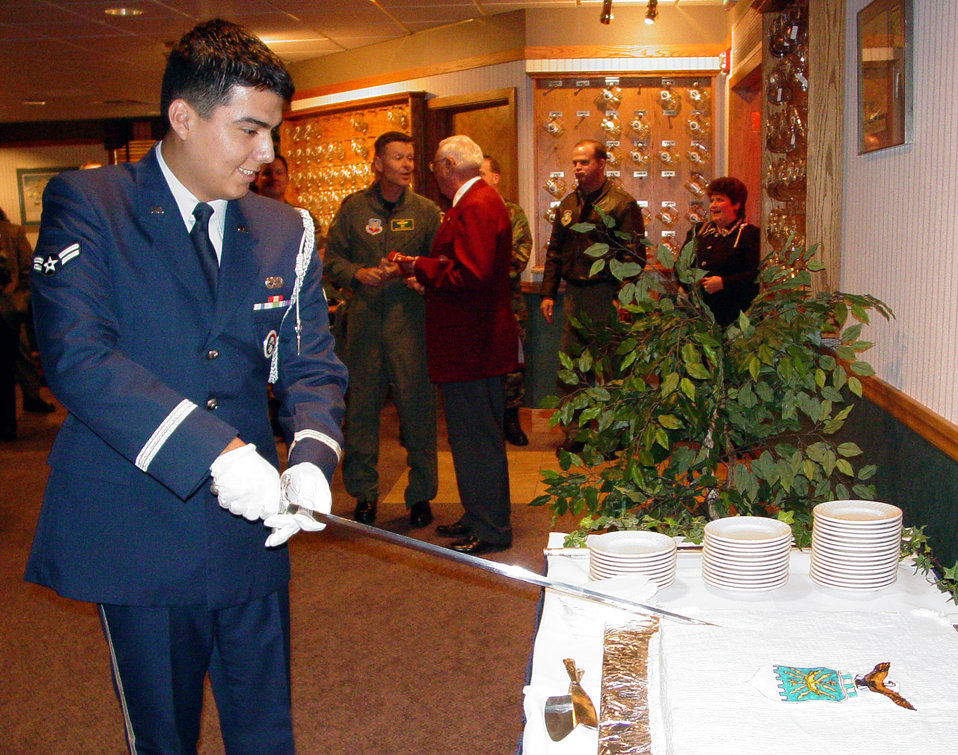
Happy Birthday Air Force

MINOT AIR FORCE BASE, N.D. -- Airman 1st Class Julian Rodriquez cuts a cake at the Jimmy Doolittle Center on Sept. 18 to celebrate the Air Force's 56th birthday. Rodriguez is on the Minot Air Force Base Honor Guard.